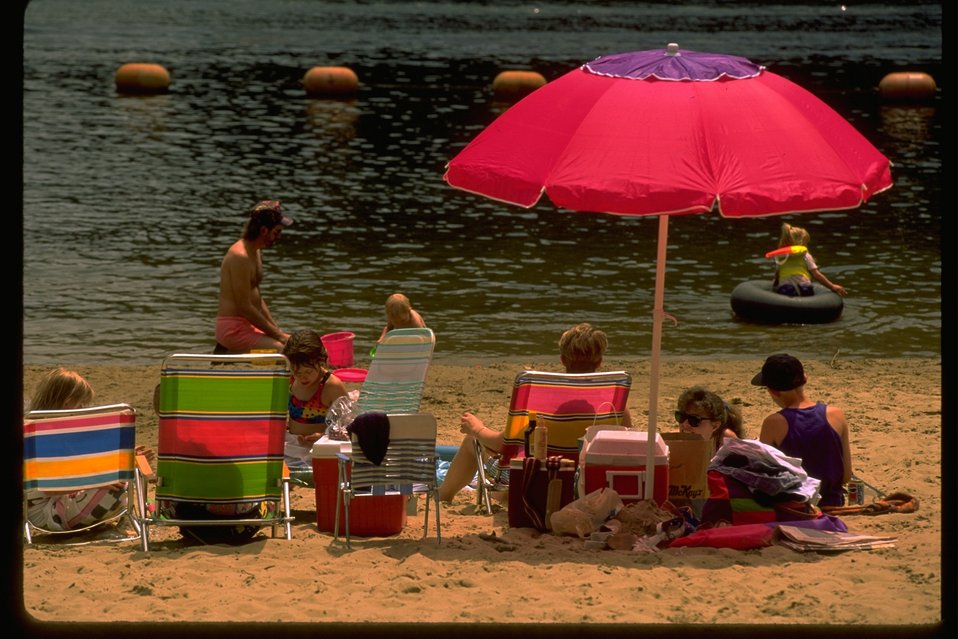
Loon Lake beach.